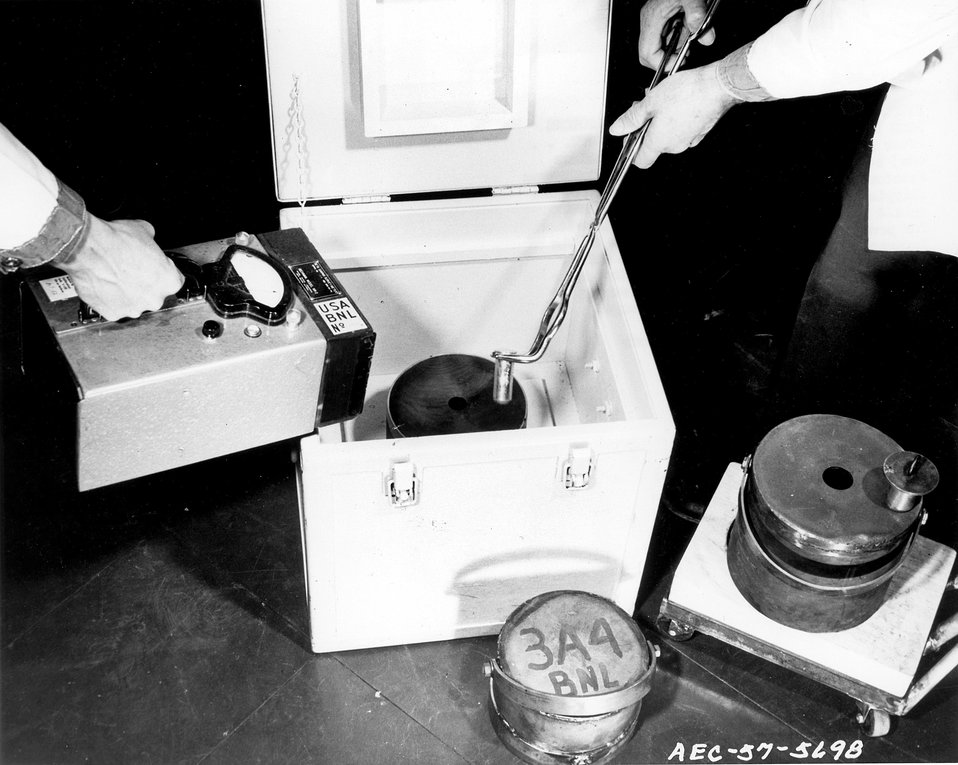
RADIOISOTOPE FROM BROOKHAVEN REACTOR READY FOR SHIPMENT...After a sample substance has been made radioactive in the Brookhaven reactor, the sample is ready for shipment. c. 1957